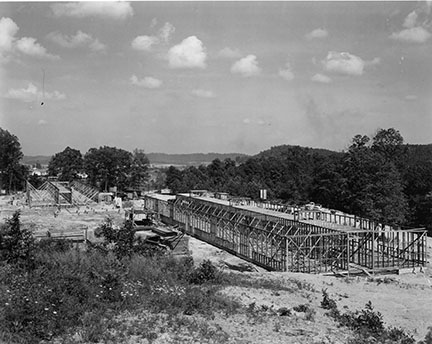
Schools at Oak Ridge